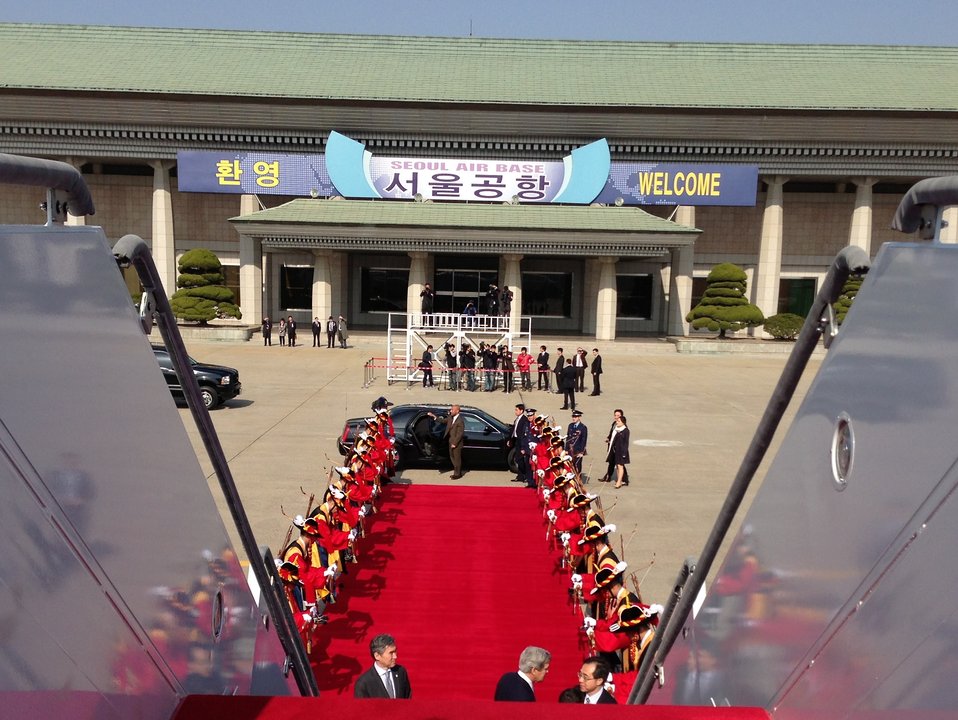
Secretary Kerry Departs South Korea

U.S. Secretary of State John Kerry says farewell to Moon Seoung-hyun, Deputy Director General of the Ministry of Foreign Affairs for North America, and the U.S. Ambassador to South Korea, Sung Kim, before boarding the plane to depart Seoul, South Korea, on April 13, 2013.